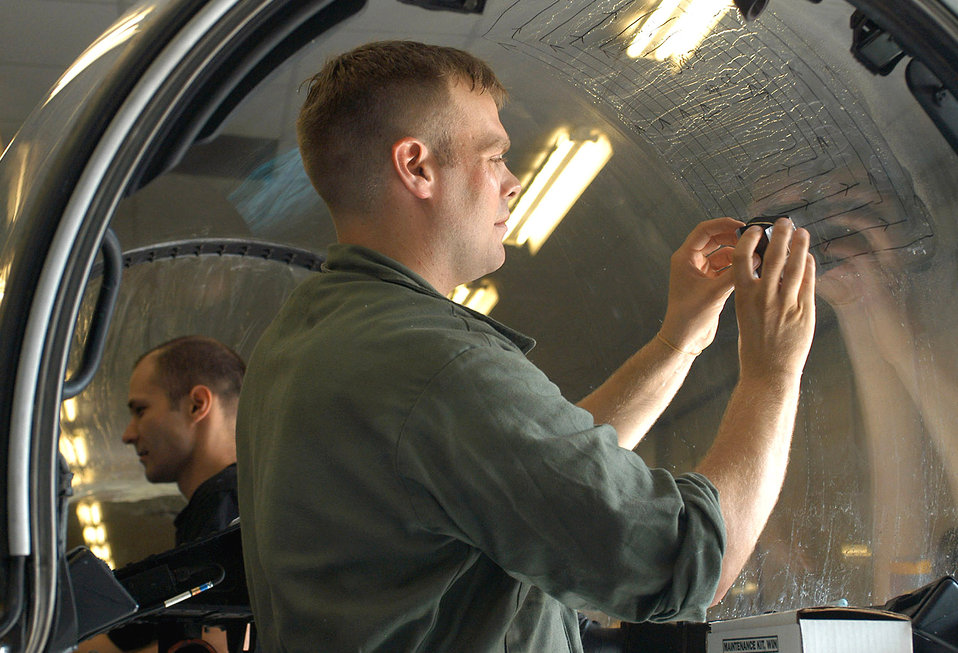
Canopy sanding

ROYAL AIR FORCE LAKENHEATH, England (AFPN) -- Senior Airman Chad Ausbrooks (foreground) and Tech. Sgt. James Niece sand a canopy in the structural maintenance shop here. Ausbrooks is an aircraft structural maintenance journeyman and Niece is a maintenance apprentice. Both are assigned to the 48th Equipment Maintenance Squadron.